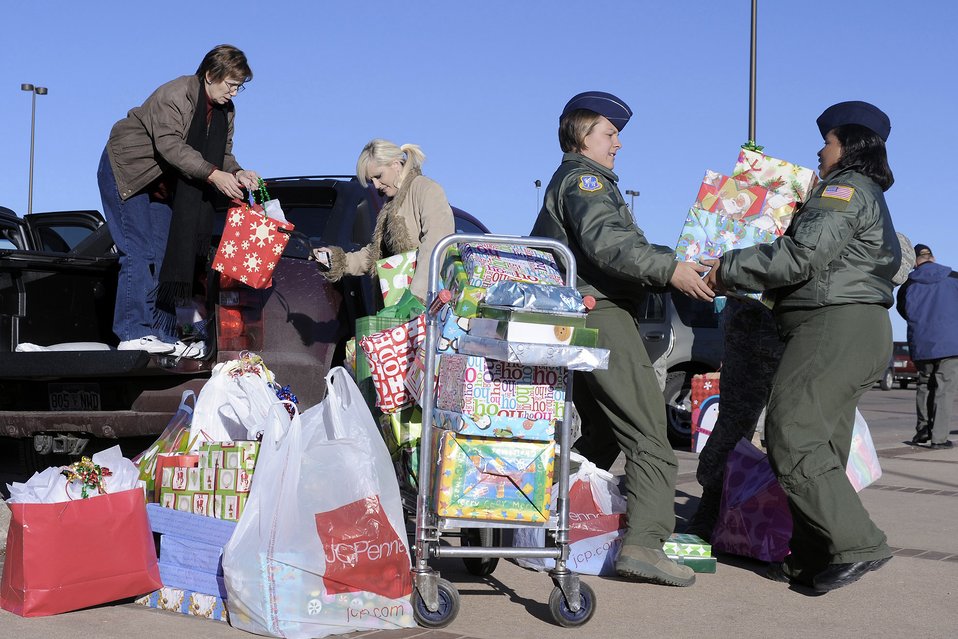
Christmas for Kids

Volunteers load toys from the